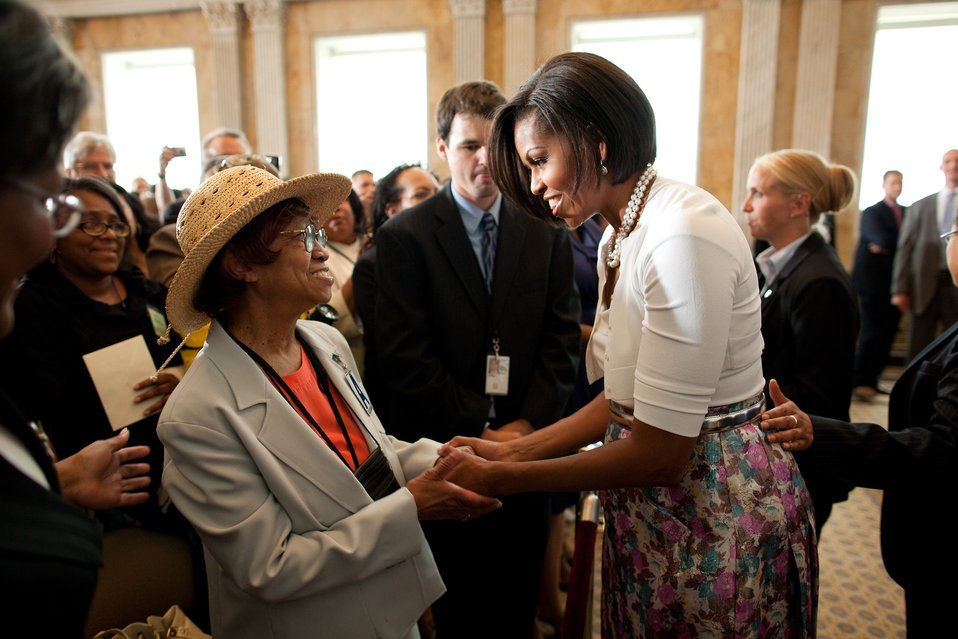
Michelle Obama visits the Treasury Department, 7/7/10

First Lady Michelle Obama greeted guest Pauline Fenderson, a typist at the IRS in Detroit, who began her public service career when Harry Truman was President of the United States. “She was a typing prodigy,” the First Lady told the audience.